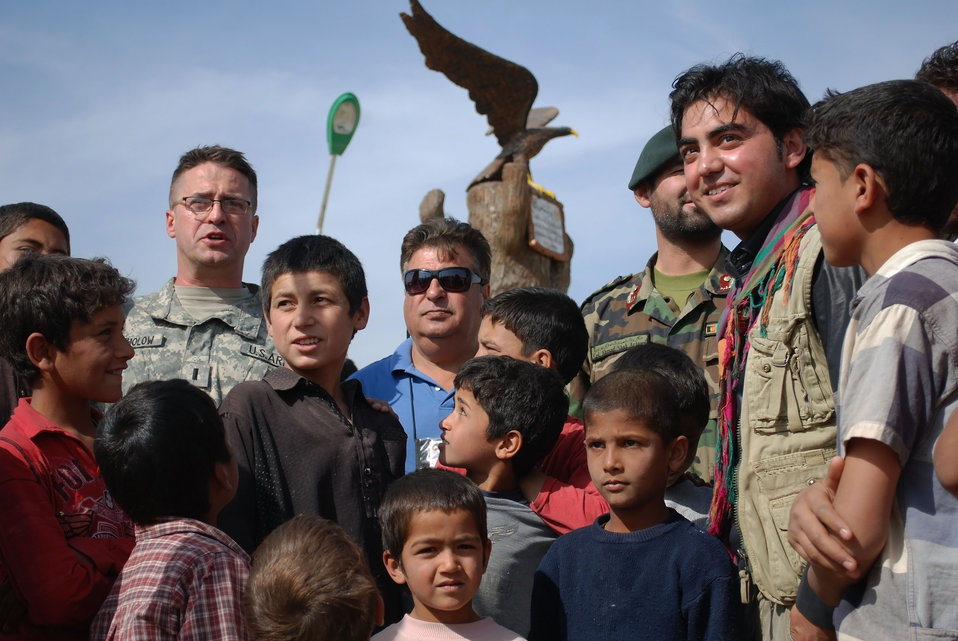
'On the Road' in Balkh Province